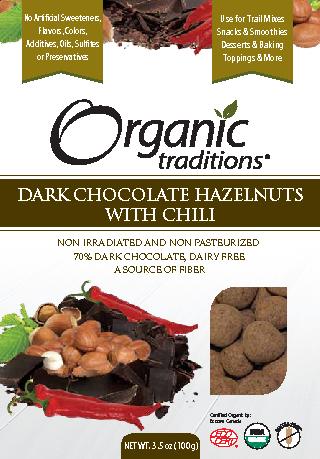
ChocHazelnutsChili 100g Front4.4375x6.375 US LR